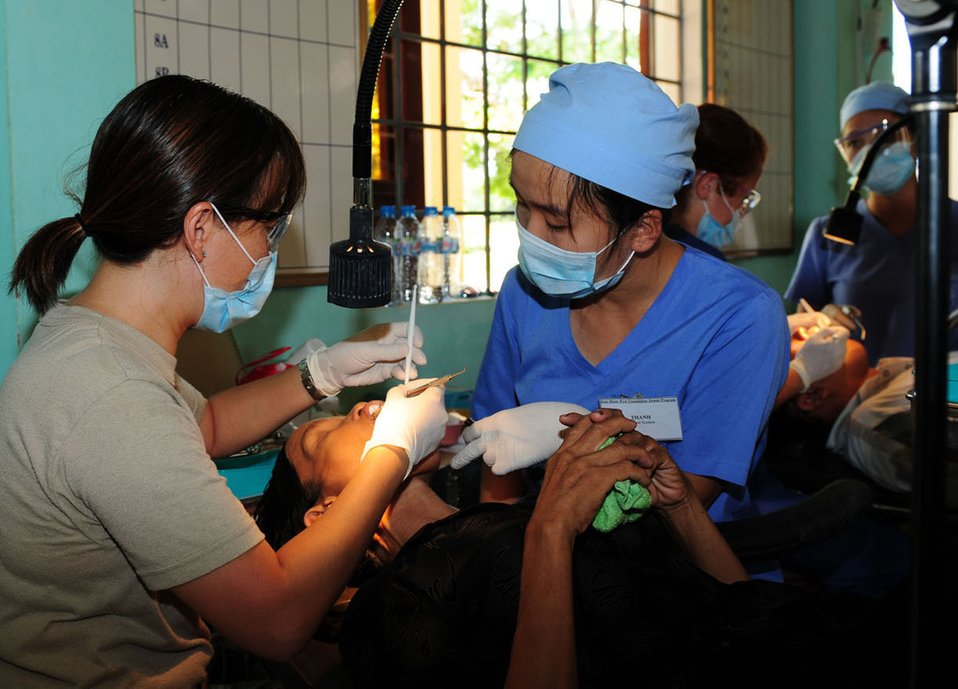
Open wide!

Maj. (Dr.) Diep Le (left) provides dental care to a Vietnamese patient Sept. 18, 2009, as part of Operation Pacific Angel 2009 in Quang Tri Province, Vietnam. Doctor Le is part of a team of Air Force medical professionals and civil engineers in Vietnam providing humanitarian assistance. Doctor Le is a dentist and Air Force reservist from Travis Air Force Base, Calif.